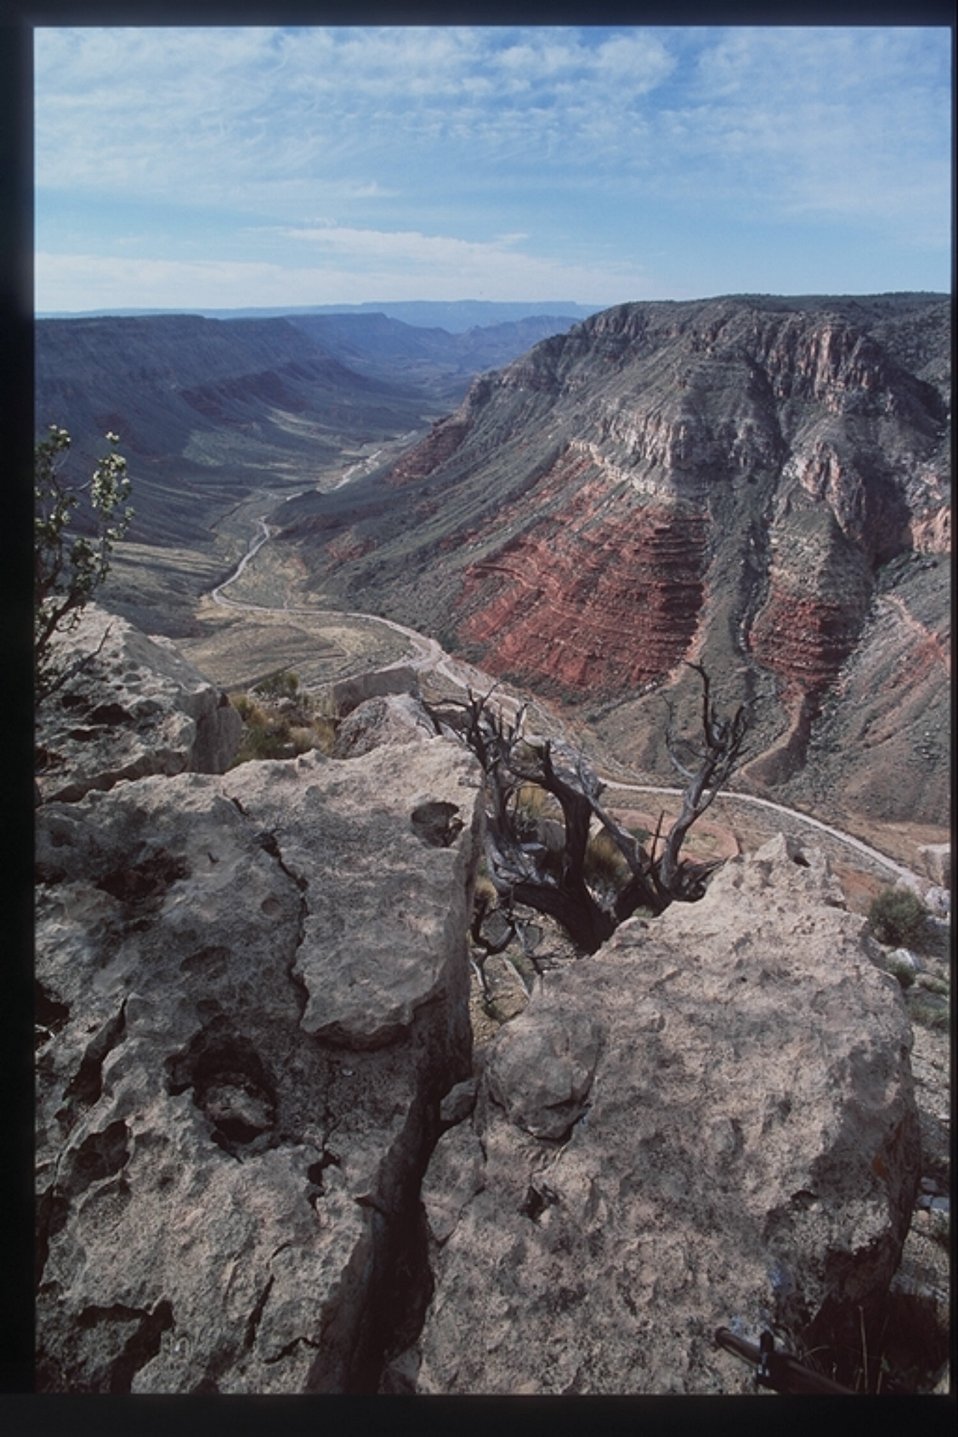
Another great view in the Grand Canyon Parashant National Monument.